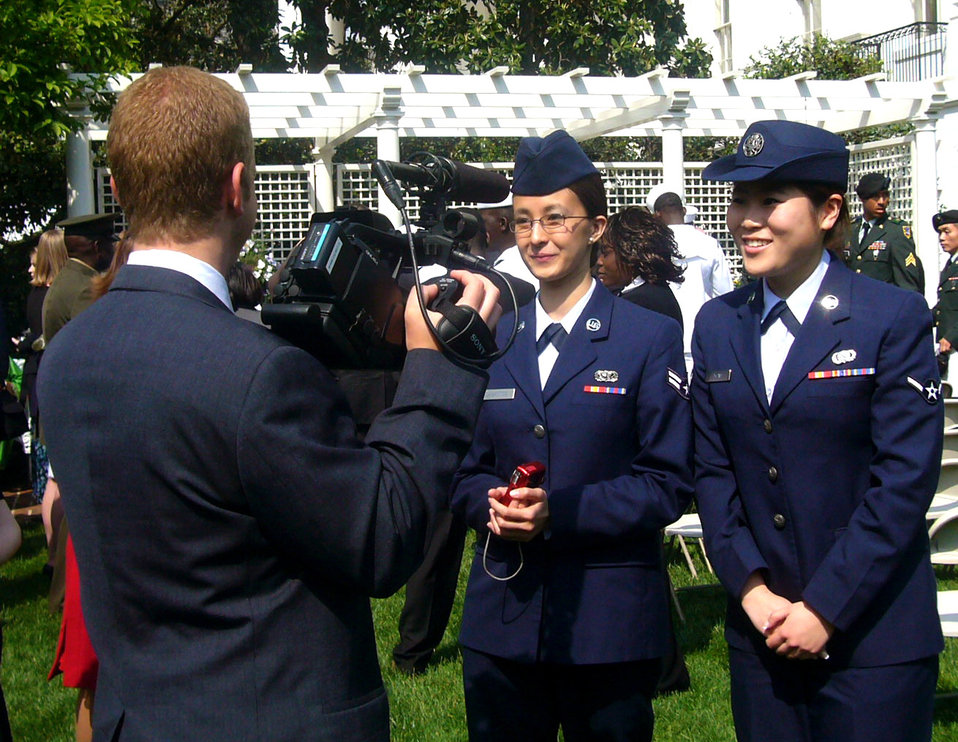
From Airmen to American

Airman 1st Class Ma Antonette Cabantog and Airman Yu Yuan perform an interview at the Oath of Allegiance ceremony at the White House April 23. The Airmen joined 22 other servicemembers in taking the Oath of Allegiance, becoming American citizens. Airman Cabantog is a 633rd Force Support Squadron food services journeyman. Airman Yuan is a 735th Supply Chain Management Group mission capability apprentice.